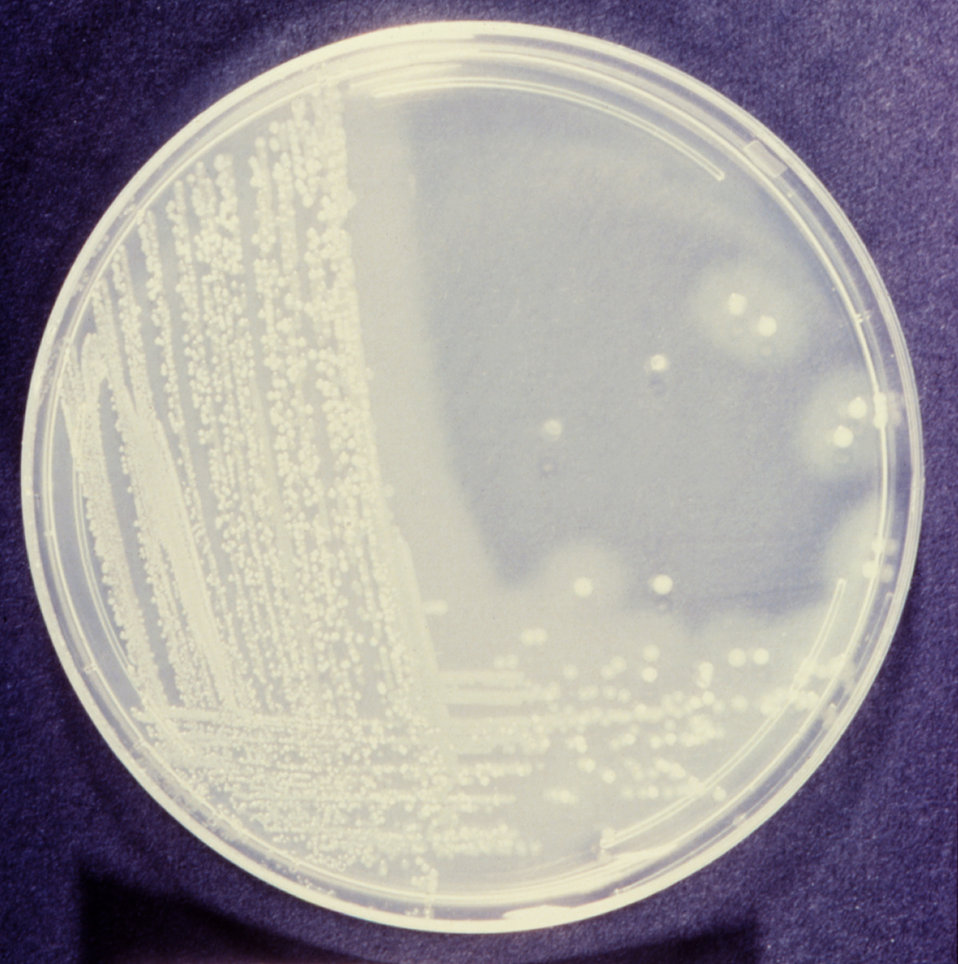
This gelatin agar medium was used in the identification of the bacteria Vibrio cholerae, the causal agent of cholera.